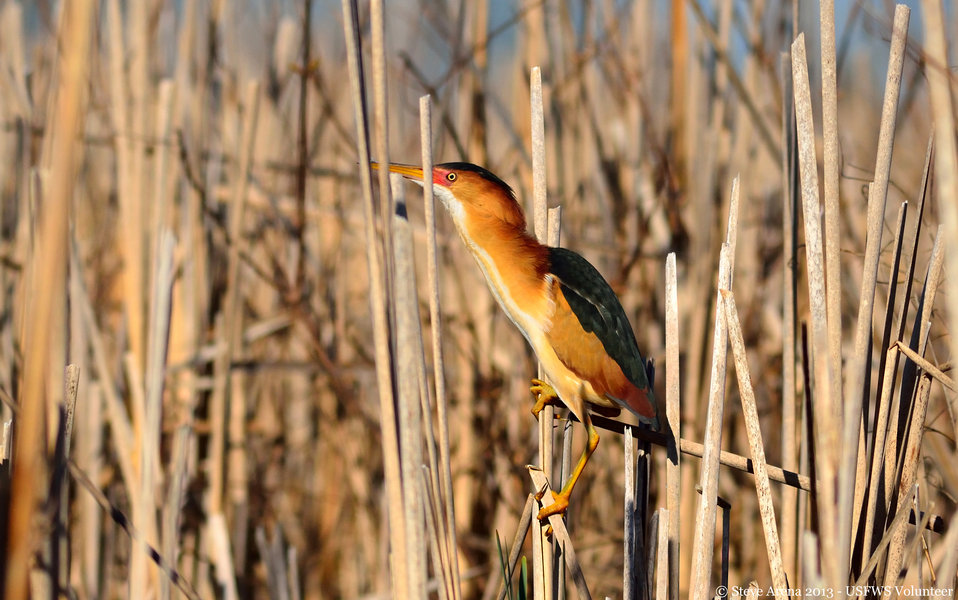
Least Bittern (Ixobrychus exilis) - male

Least Bittern, Great Meadows NWR, Concord, MA

Credit: Steve Arena/USFWS

04 May 2013